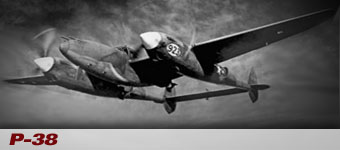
Doolittle Raid

Doolittle's Raid history spotlight graphic .